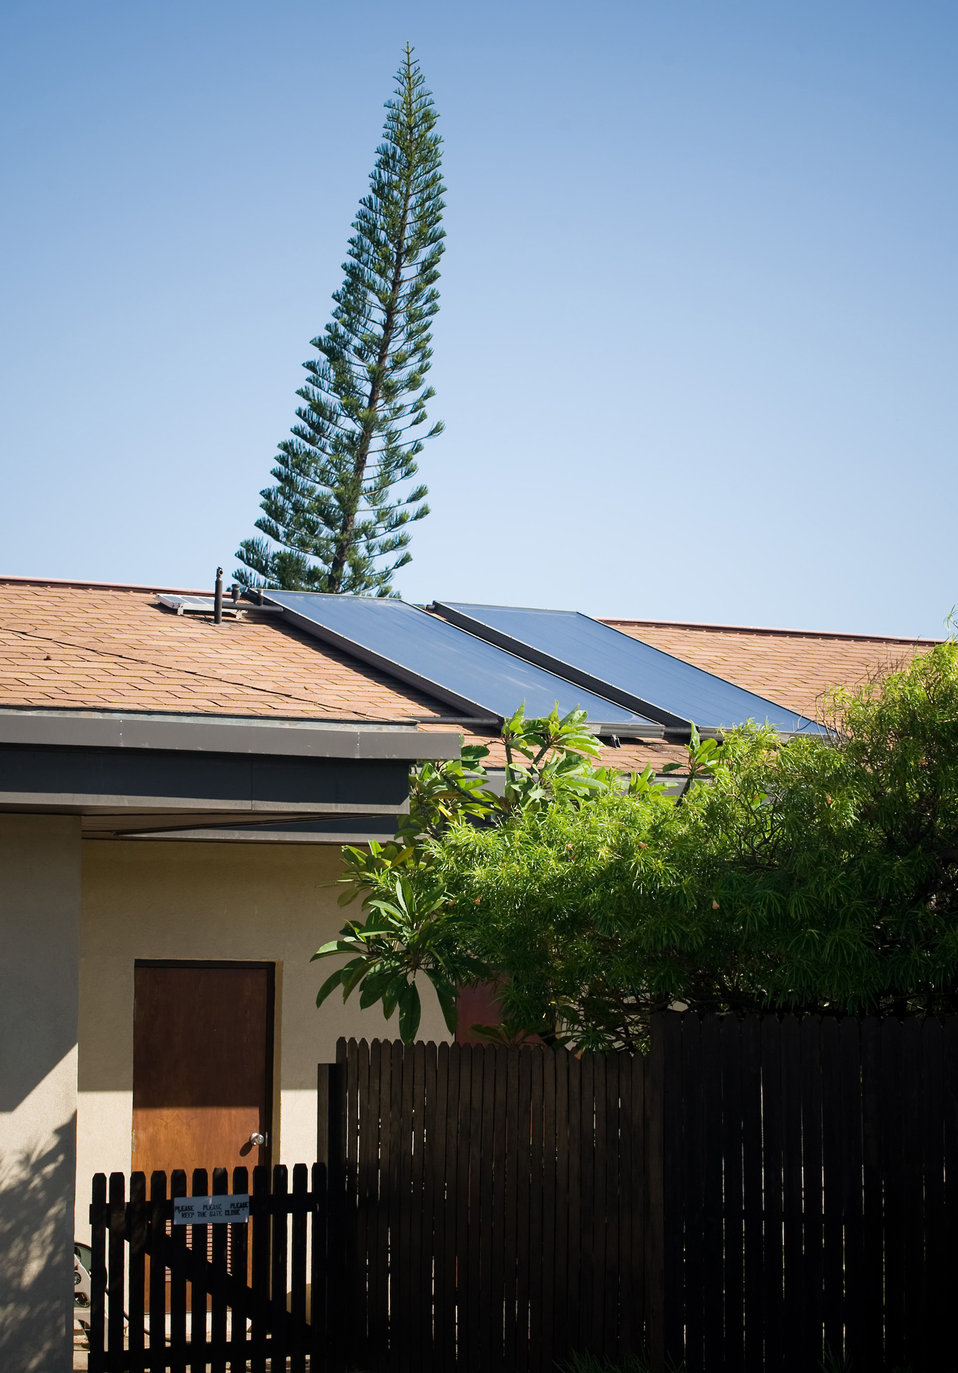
Win with Wind

Solar water heating panels are another of the energy conservation / passive